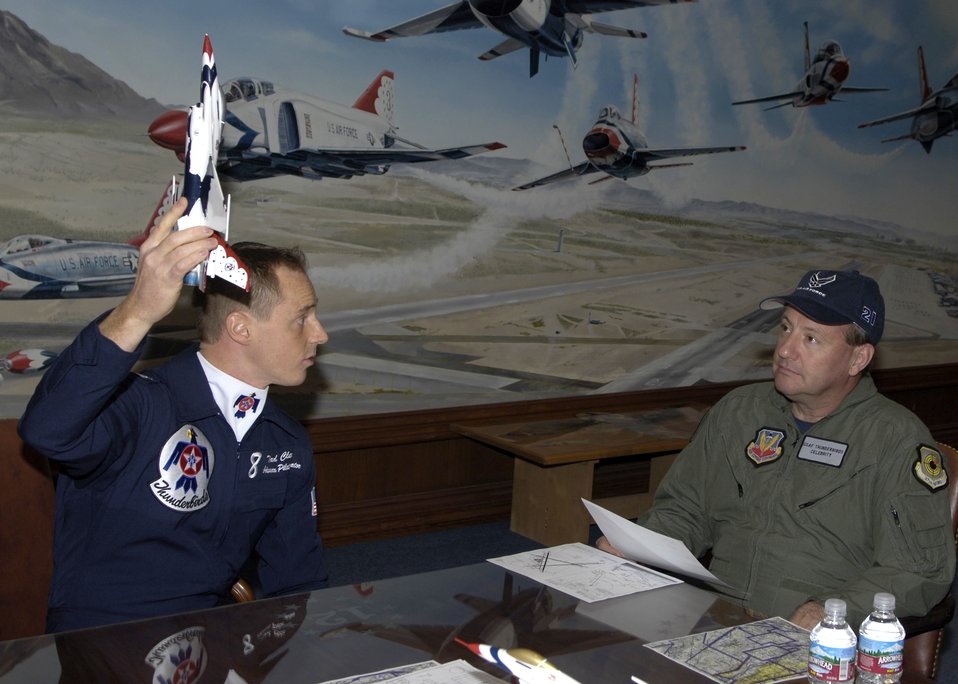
Thunderbird flight

Capt. Tad Clark shows Kenny Schrader, driver of the Air Force #21 Wood Brothers/JTG Racing Ford Fusion how they are going to climb after take off, Thursday, Mar. 9, 2006. Mr. Schrader received an orientation flight with the Air Force Thunderbirds. Captain Clark is an advance pilot/narrator for the Thunderbirds.